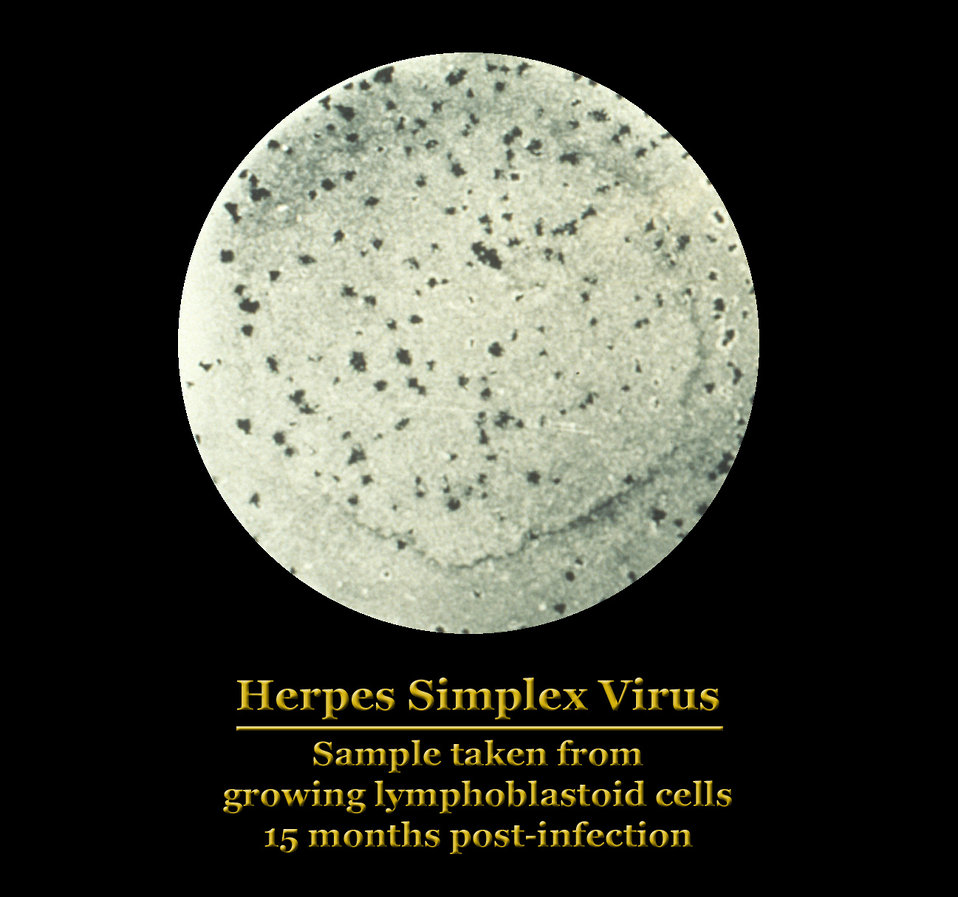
This micrograph reveals the presence of herpes simplex virus virions due to the formation of plaques in this tissue culture.